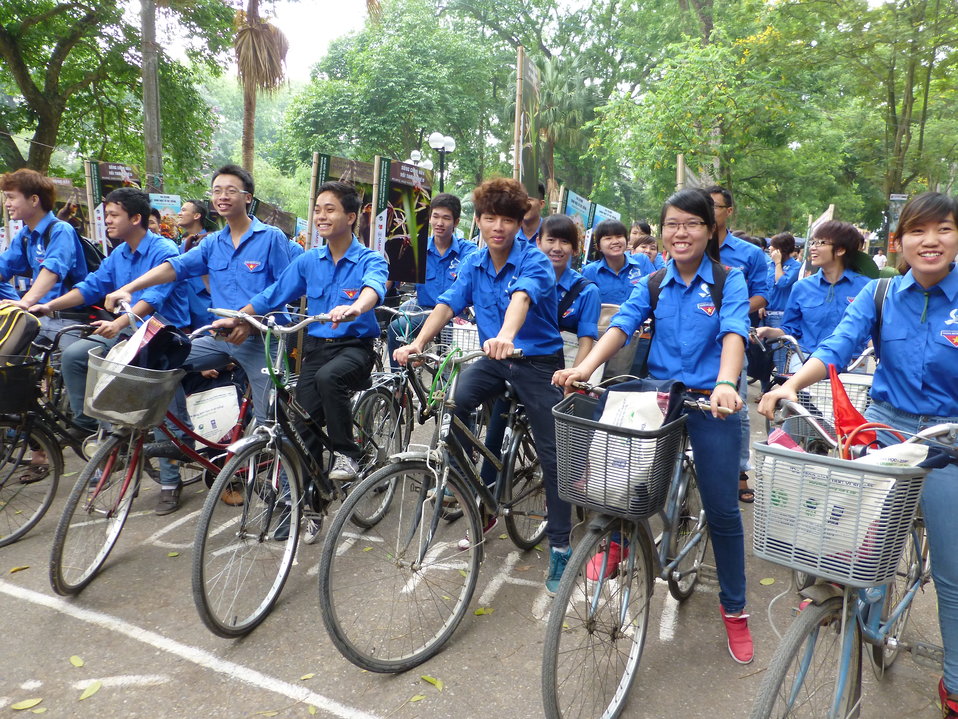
USAID Supports International Day for Biological Diversity in Hanoi